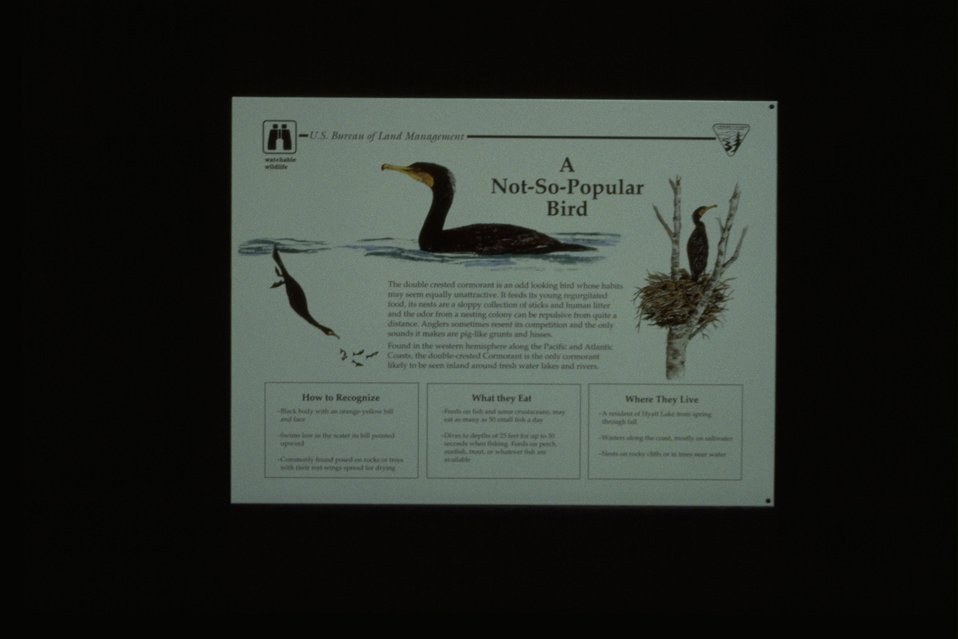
Watchable Wildlife panel from Hyatt Lake.